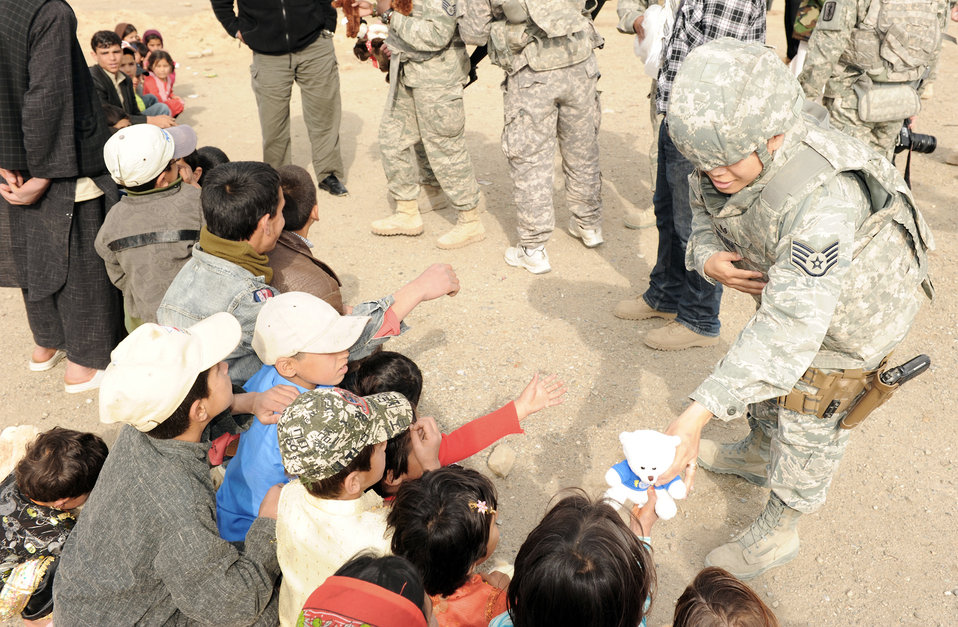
Operation Care

Army Lt. Col. Terry Owens and Capt. Jason Williams discuss item distribution with a village elder and an interpreter during a recent Operation Care humanitarian aid mission April 5, 2010, outside of Bagram Airfield, Afghanistan. Colonel Owens is the Operation Care president from the 30th Medical Command. Captain Williams is from the 455th Expeditionary Security Forces.